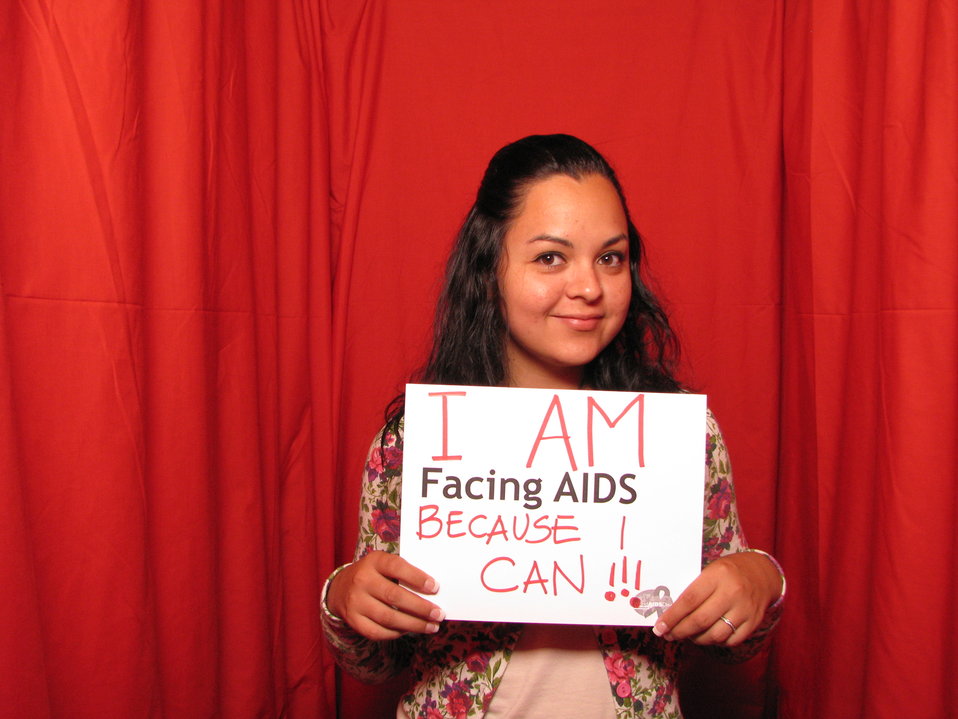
I AM FACING AIDS BECAUSE I CAN!!!

From the AIDS.gov photo booth at the U.S. Conference on AIDS, September 2010 (Orlando, FL).